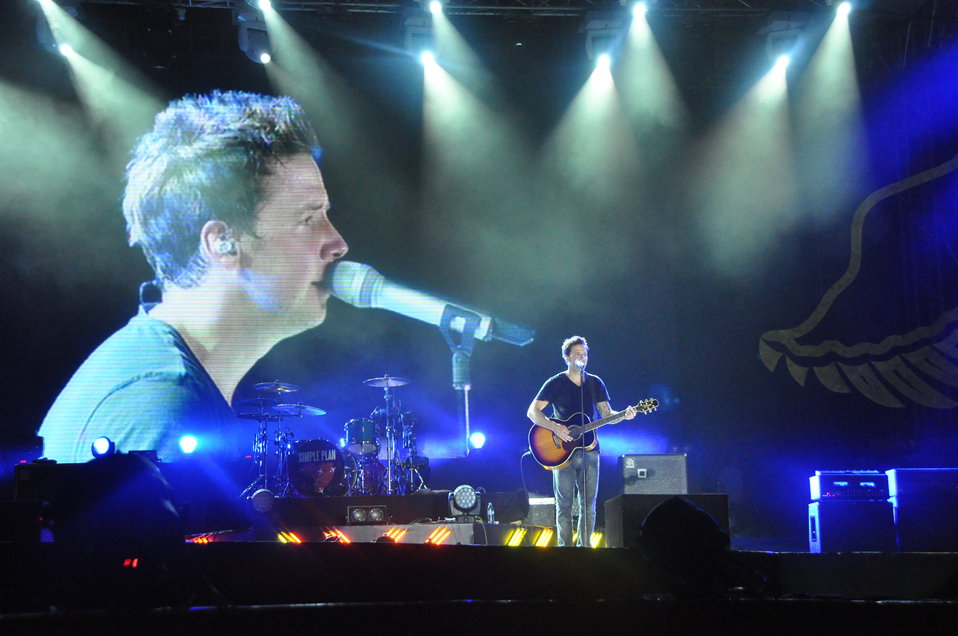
Simple Plan performs at MTV EXIT concert in Hanoi against human trafficking

USAID co-sponsors MTV EXIT concert, campaign against human trafficking